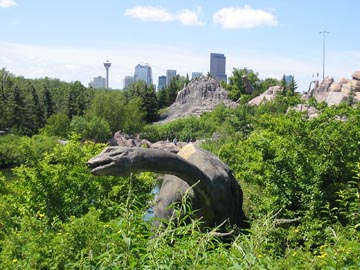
Sculptures at Calgary Zoo